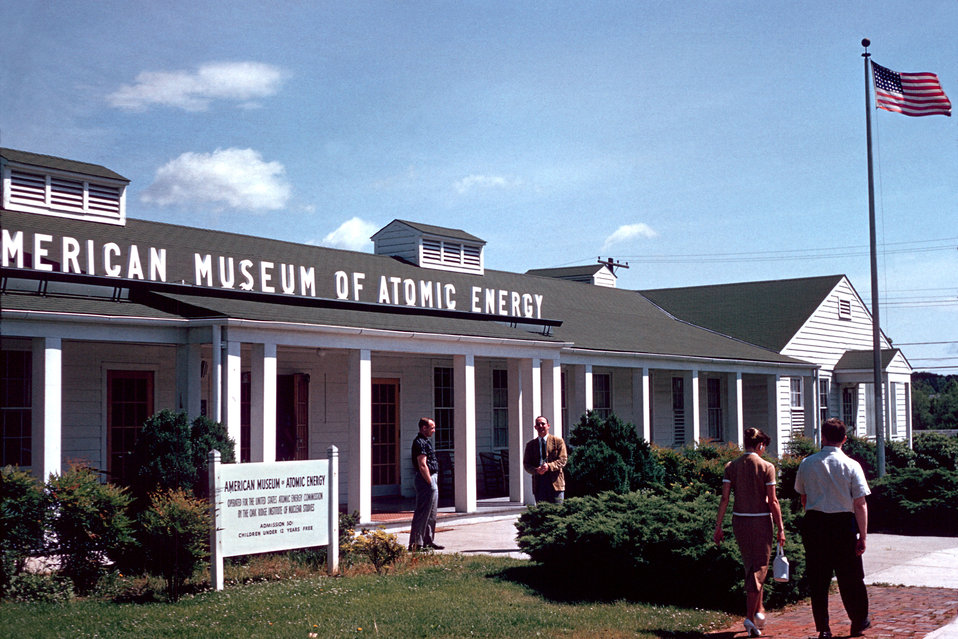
American Museum of Atomic Energy Oak Ridge

DOE photo by Ed Westcott American Museum of Atomic Energy 1958